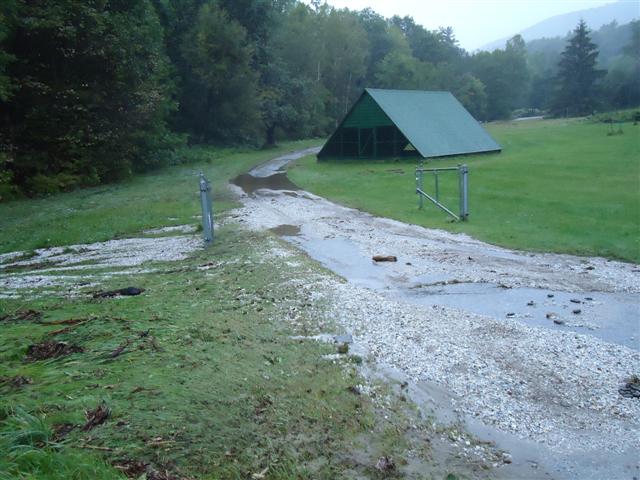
Storm damage at Eisenhower National Fish Hatchery in Vermont

Water intake road flooding.